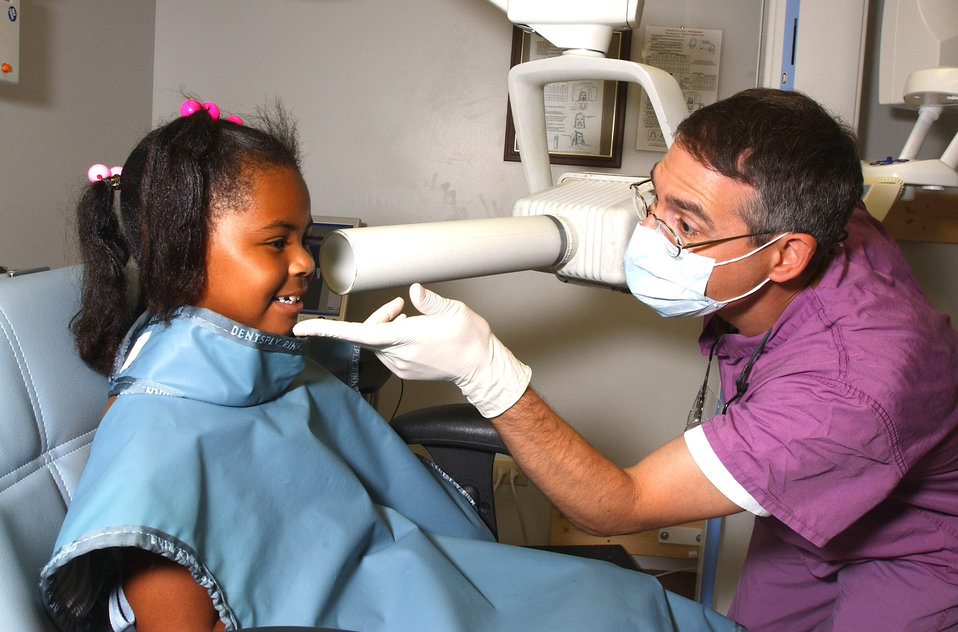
Course prepares dentists to treat children worldwide

Maj. David Kieser prepares to take dental X-rays of Deaveyon Moore during a Dunn Dental Clinic pediatric appointment Sept. 18 at Lackland Air Force Base, Texas. Major Kieser is a Pediatric Dental Course residents from Scott Air Force Base, Ill. Deaveyon is daughter of Staff Sgt. T'wanna Moore, a 59th Dental Squadron dental technician from Lackland AFB.